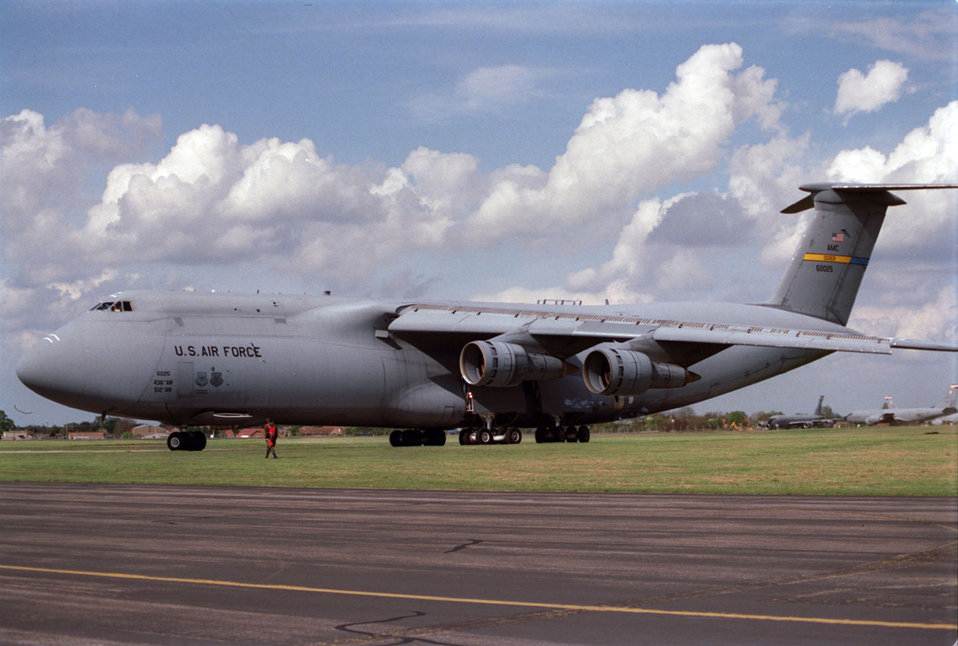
Galaxy delivery

ROYAL AIR FORCE, MILDENHALL, England -- A Force C-5 Galaxy arrives at here, April 22, 1999. The C-5 is delivering four fuel trucks to help the fuels management flight of the 100th Supply Squadron keep up with the increasing demand to fuel more KC-135R Stratotankers for Operation Allied Force.